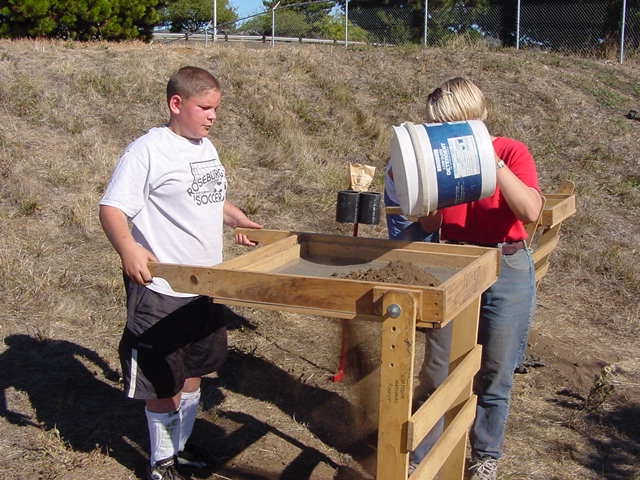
Eric Fullerton screening for artifacts.